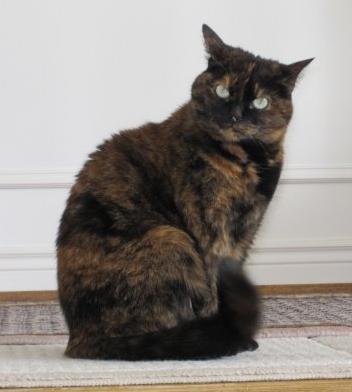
A 6-year old tortoise shell cat.